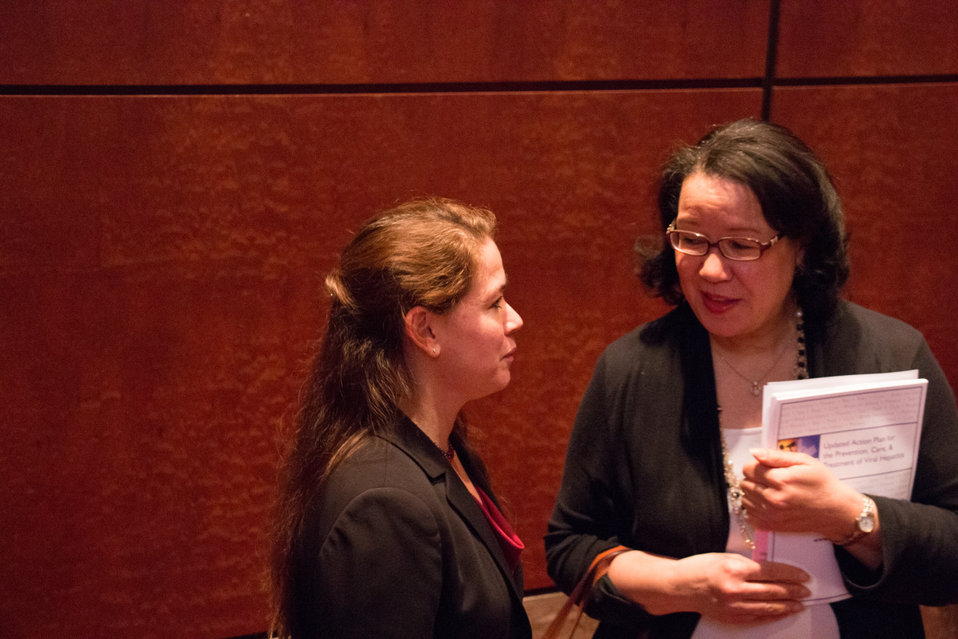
VHAP Launch (339 of 511)